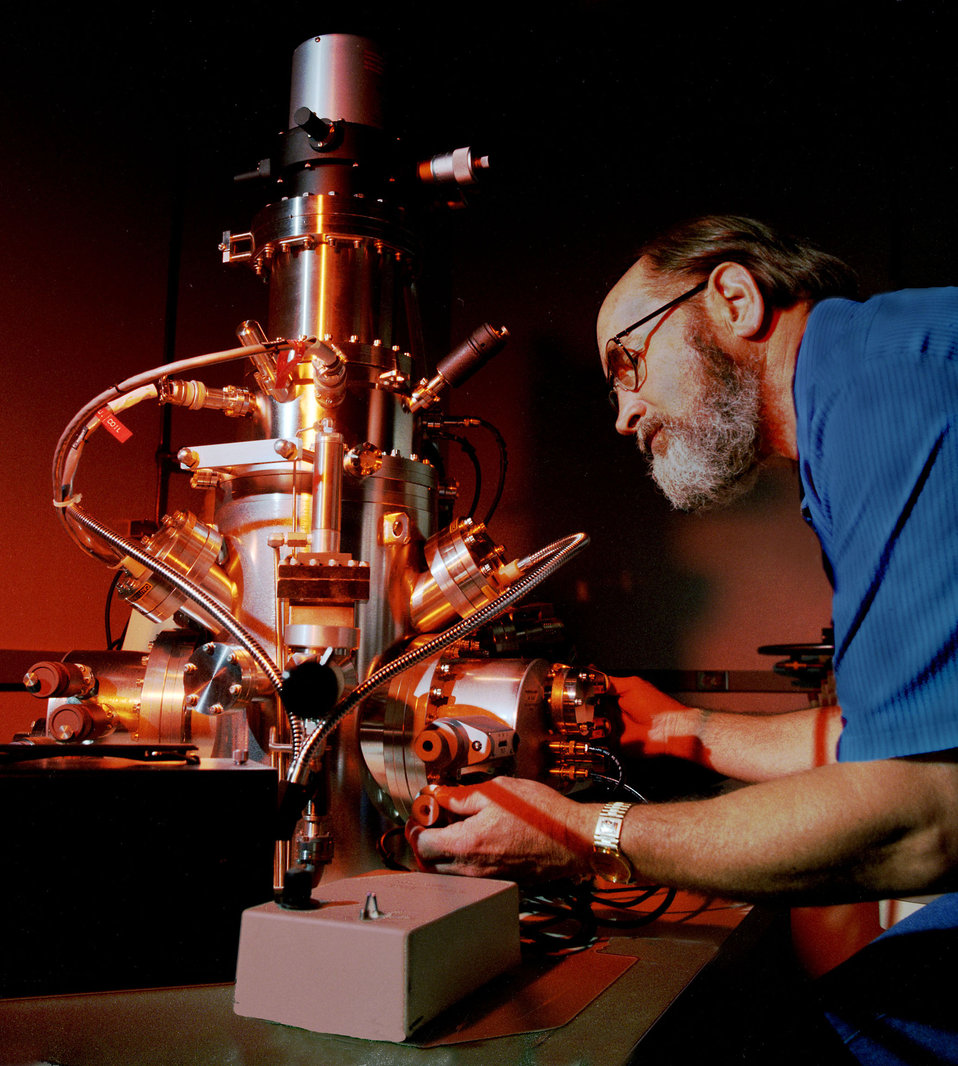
ORNL Electron Microscope

(1987) A researcher in Oak Ridge looks through an electron microscope at the High Temperature Materials Laboratory.